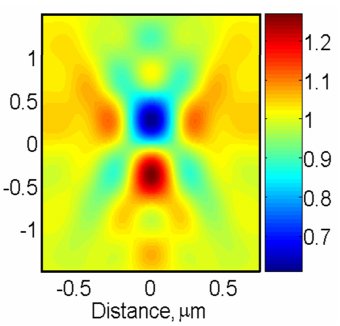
TSOM; Nanoscale Optical Technique